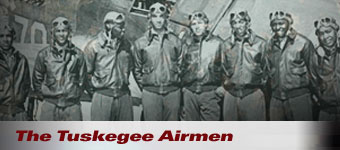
Tuskegee Airmen

The term